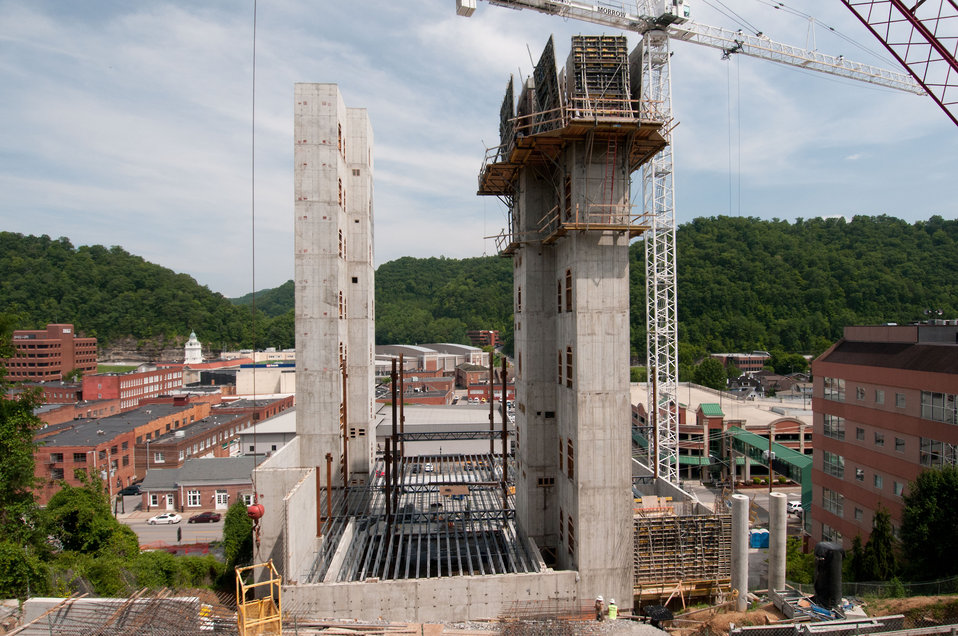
A $25 million expansion project at University of Pikeville Kentucky College of Osteopathic Medicine (UP-KYCOM), Pikeville, KY on Tuesday, July 12, 2011.